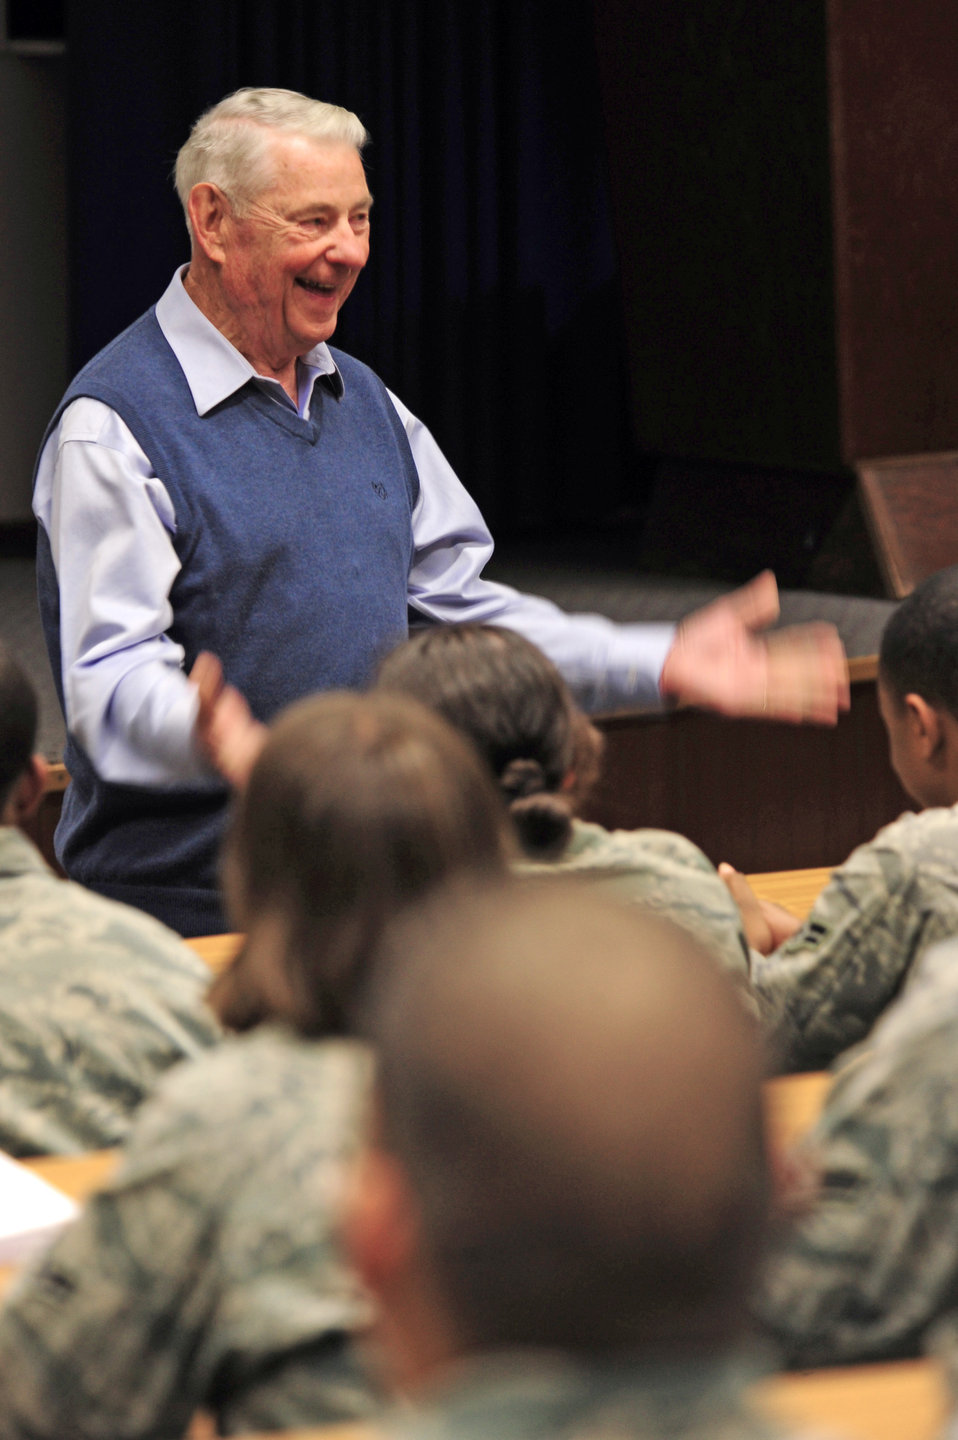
Former CMSAF offers Airmen words of wisdom

Retired Chief Master Sgt. Robert D. Gaylor visits with Airmen Sept 7, 2010, at the 435th Security Forces Regional Training Center in Sembach Air Base, Germany. Chief Gaylor took the opportunity to speak to the students as well as receive demonstrations on how security forces Airmen are training for deployment operations. Chief Gaylor is the fifth chief master sergeant of the Air Force.